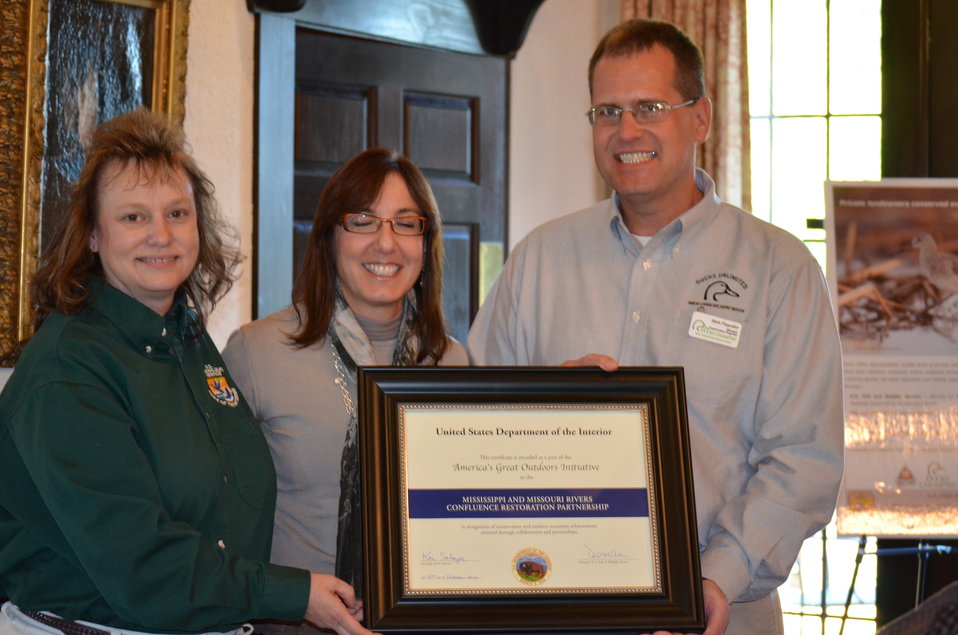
Honoring Ducks Unlimited

Award presented to Mark Flaspohler, manager of conservation programs with Ducks Unlimited, for his organization's role in confluence conservation efforts. Ducks Unlimited has administered and delivered a very successful North American Wetlands Conservation Act and Conservation Easement programs, and have been an essential partner in securing wetland habitat in the confluence, which is recognized as an important area for migratory birds. USFWS/Ashley Spratt